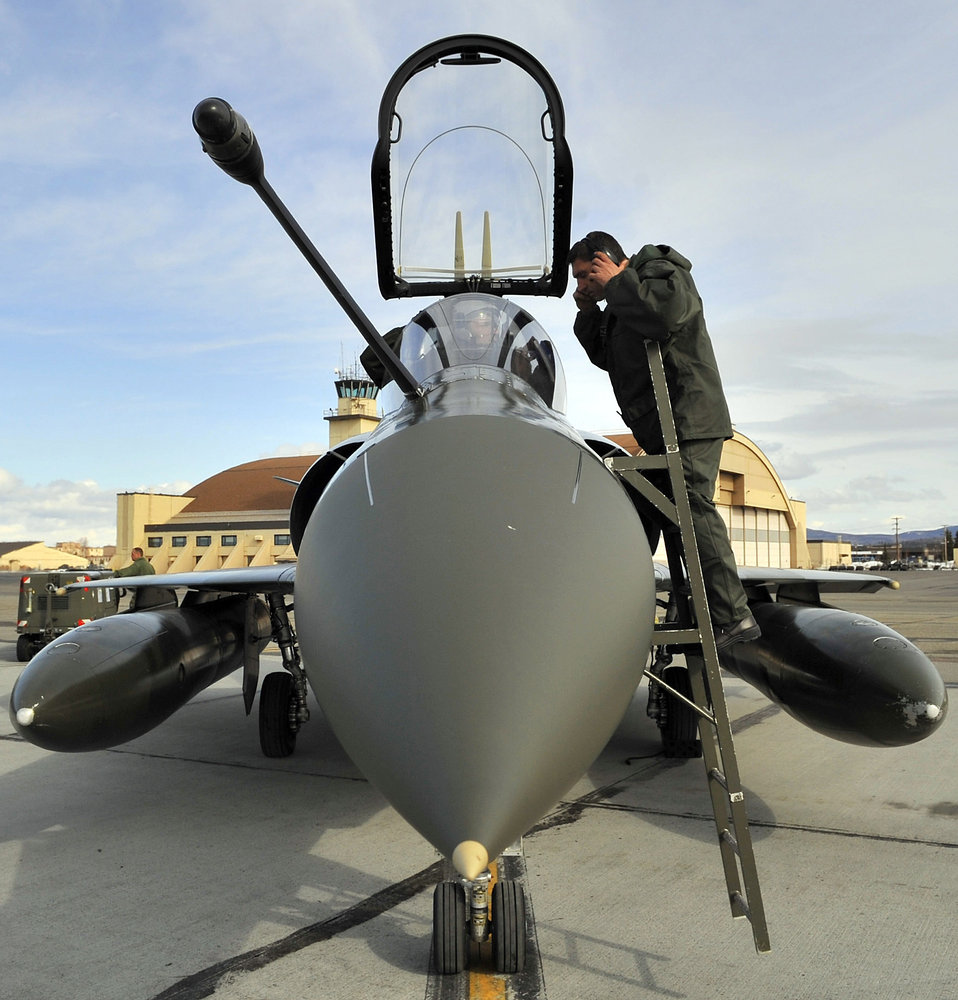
French air forces arrive for Red Flag-Alaska

A crew chief from Luxeuil Air Base, France, speaks to a Mirage 2000 pilot April 14 at Eielson Air Force Base, Alaska. French air force personnel arrived at Eielson AFB to participate in Red-Flag Alaska, which provides unique opportunities to integrate various forces into joint, coalition, and bilateral training from simulated forward operating bases.